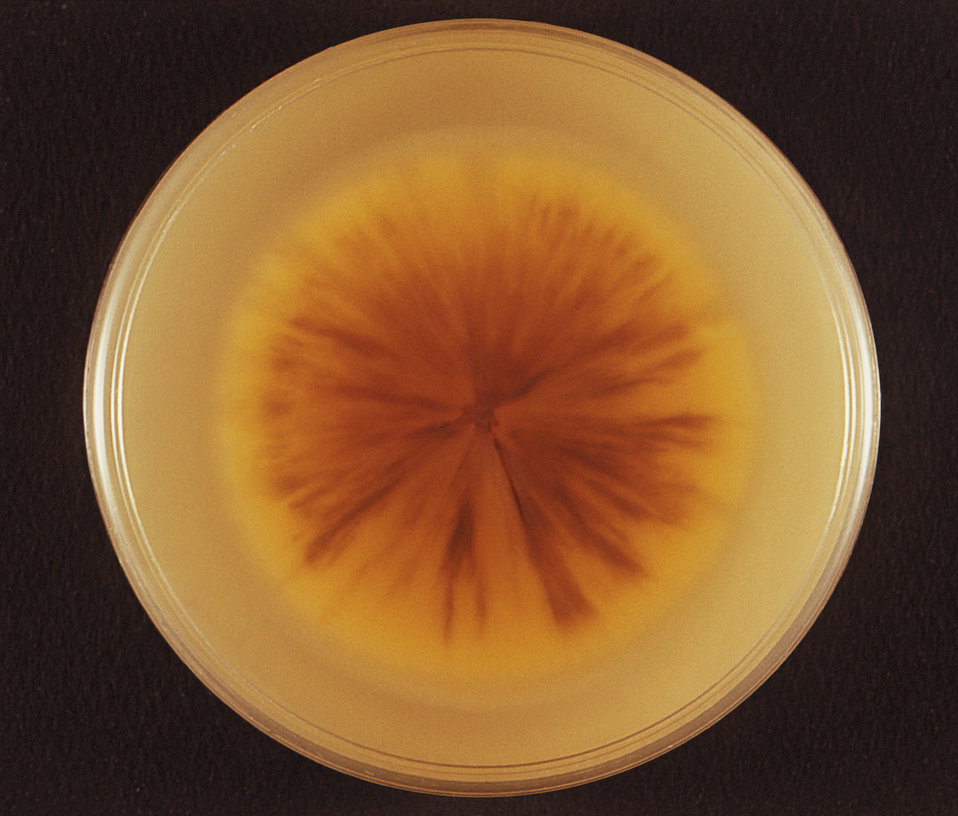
This image depicts the reverse view, i.e., view from the bottom, of a Petri dish culture in which was growing the teleomorph, or end-stage phase, of the fungal organism, Trichophyton mentagrophytes. A dermatophytic fungus, this teleomorphic phase is also known as, Arthroderma benhamiae. See PHIL 12651, for a view of this colony from the front.